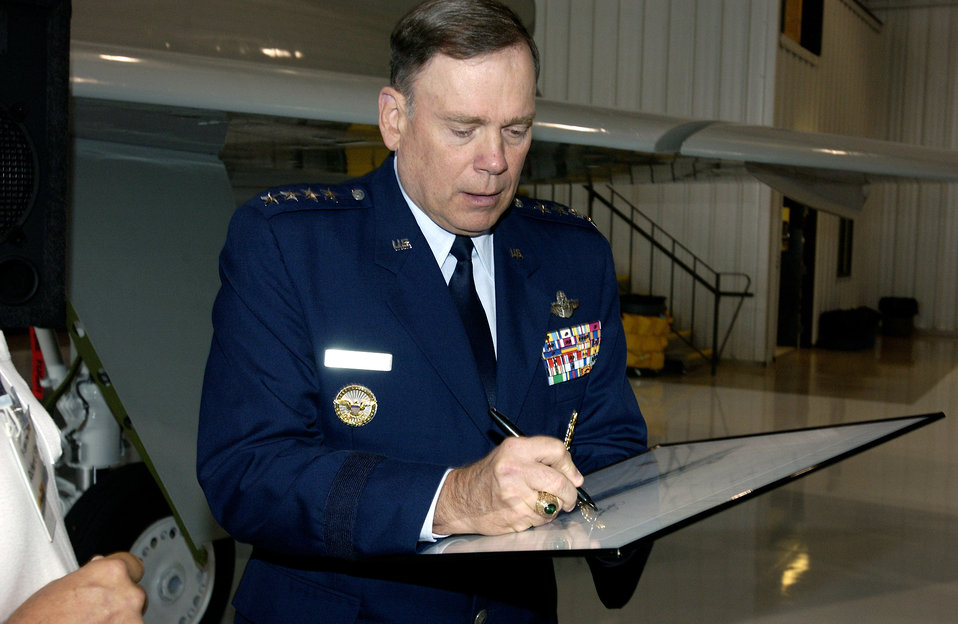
General Jumper visits Pacific Coast Air Museum

SANTA ROSA, Calif. -- Air Force Chief of Staff Gen. John P. Jumper signs a photograph during an F-106A Delta Dart dedication ceremony for his late father, Maj. Gen. Jimmy Jumper, at the Pacific Coast Air Museum here Oct. 16.